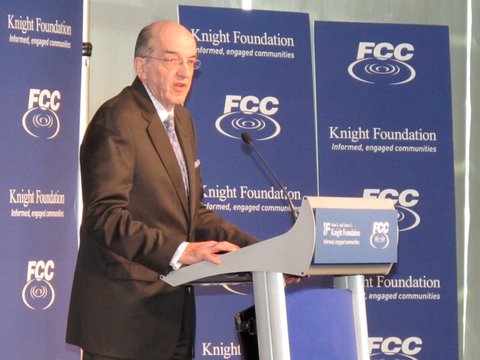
FCC Commissioner Michael J. Copps addresses America's Digital Inclusion Summit at The Newseum, March 9, 2010. 'Access denied is opportunity denied.'